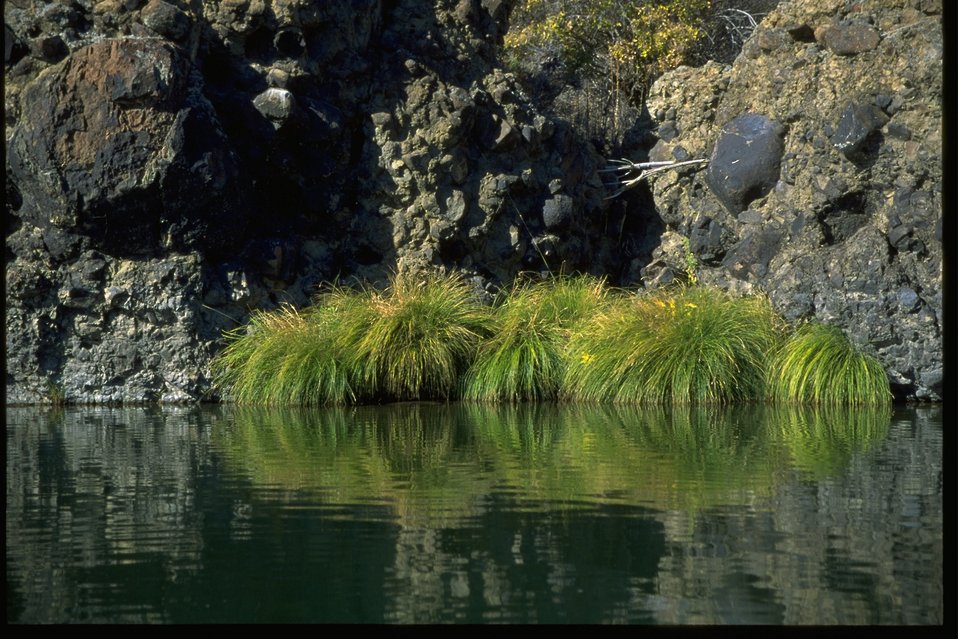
Riparian vegetation along the John Day River.